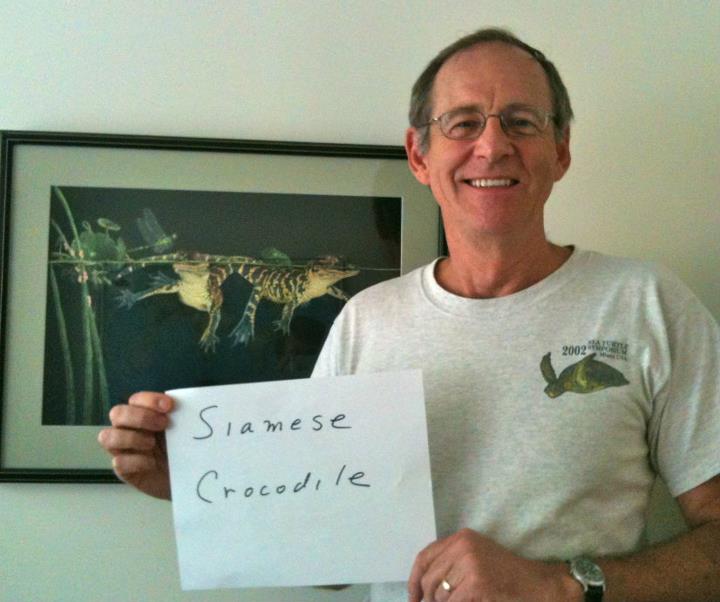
Earl Possardt, 'Siamese Crocodile,'

International Affairs participates in FFI's In Our Hands campaign